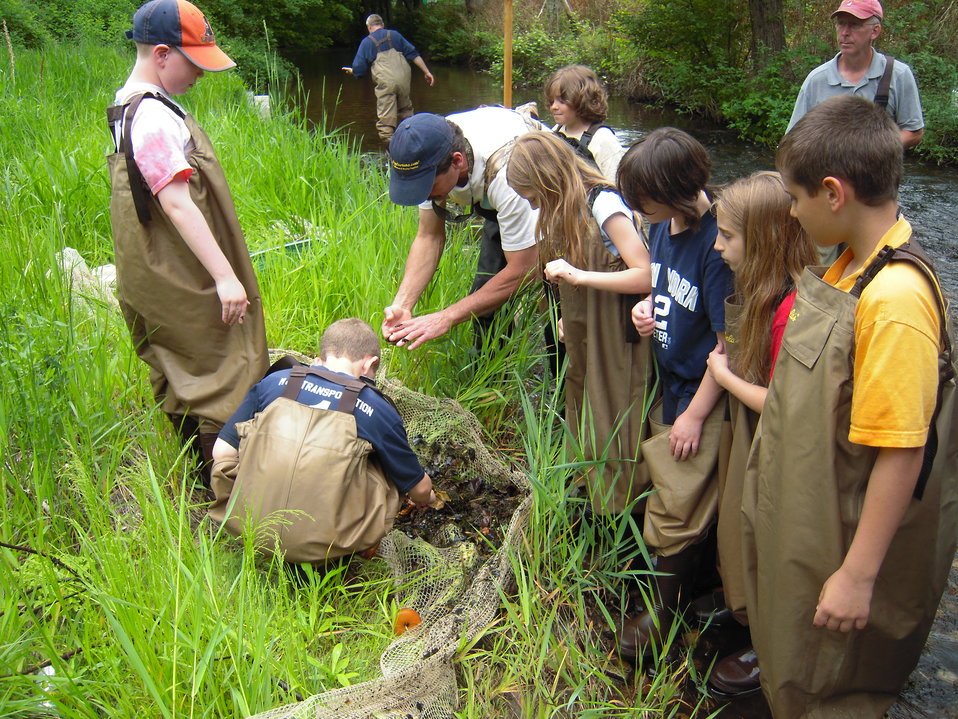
Finding different bugs